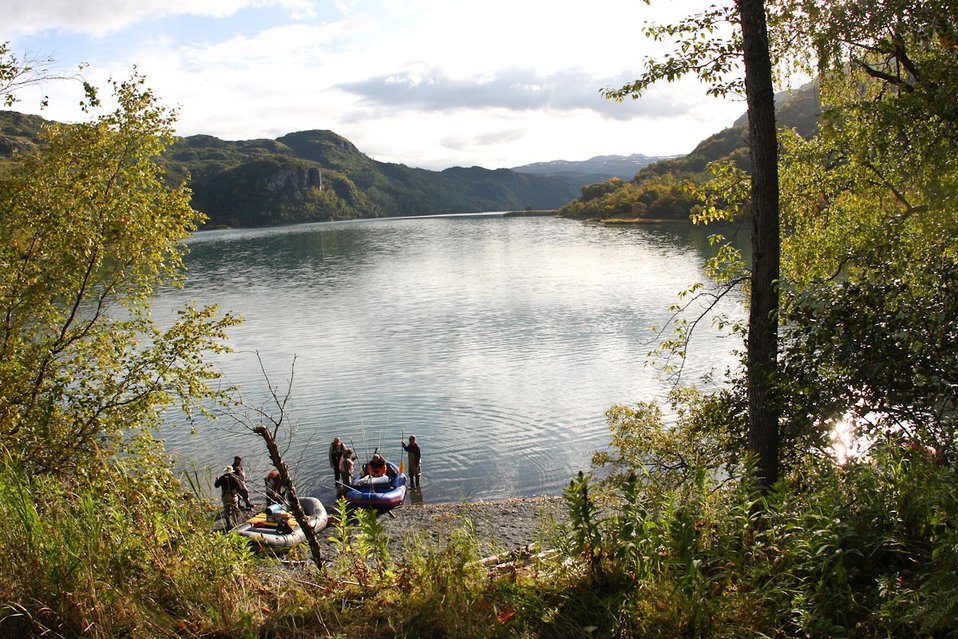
Visitors preparing to float the Uganik River

Lisa Hupp/USFWS
Source: Kodiak NWR
The Uganik River is a short, popular float for fishermen and recreationists. It is approximately 6 miles from the lake to ocean outlet and there are many opportunities for salmon and trout fishing.